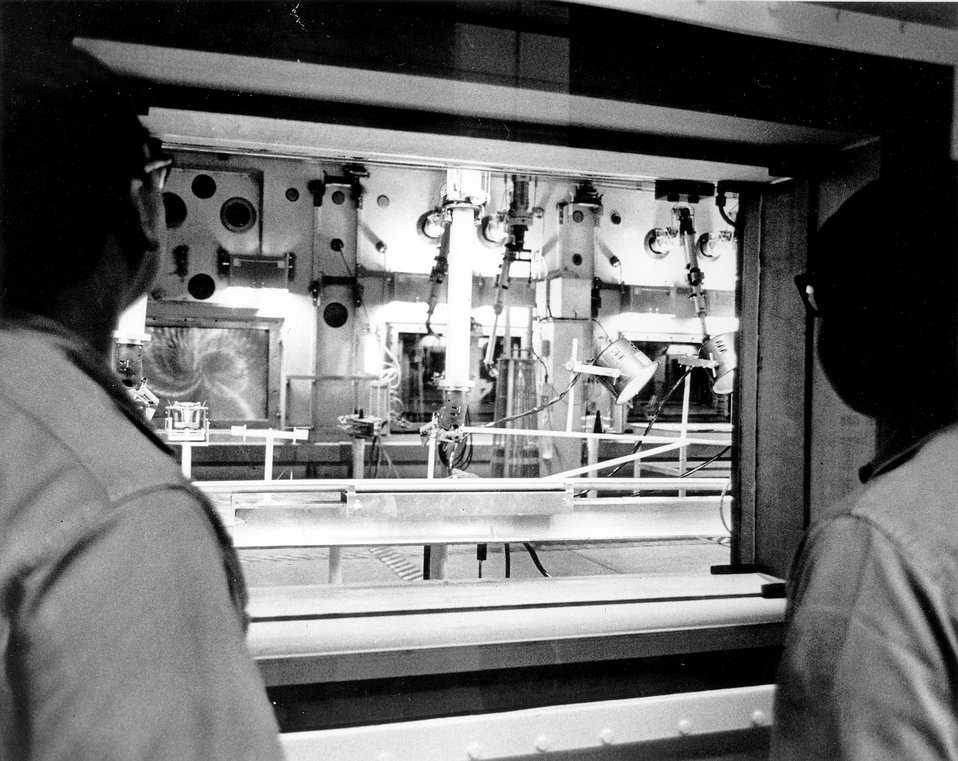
A view through one of the shielding windows into the Argon cell of Argonne's Lab Hot Fuel Examination Facility/ North.
c.1972